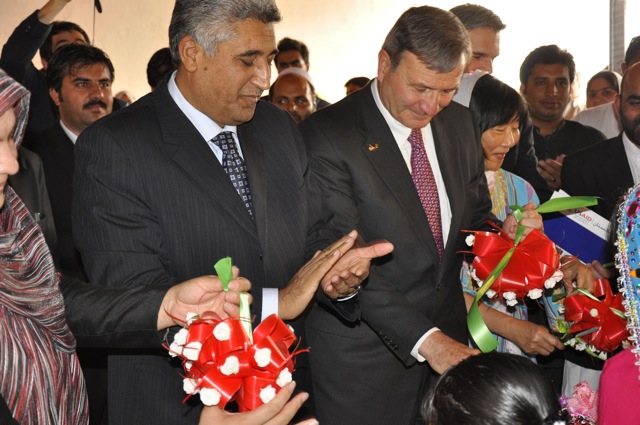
Kabul Women's Farm Service Center to Provide More Access to Supplies and Materials for Afghan Women Farmers